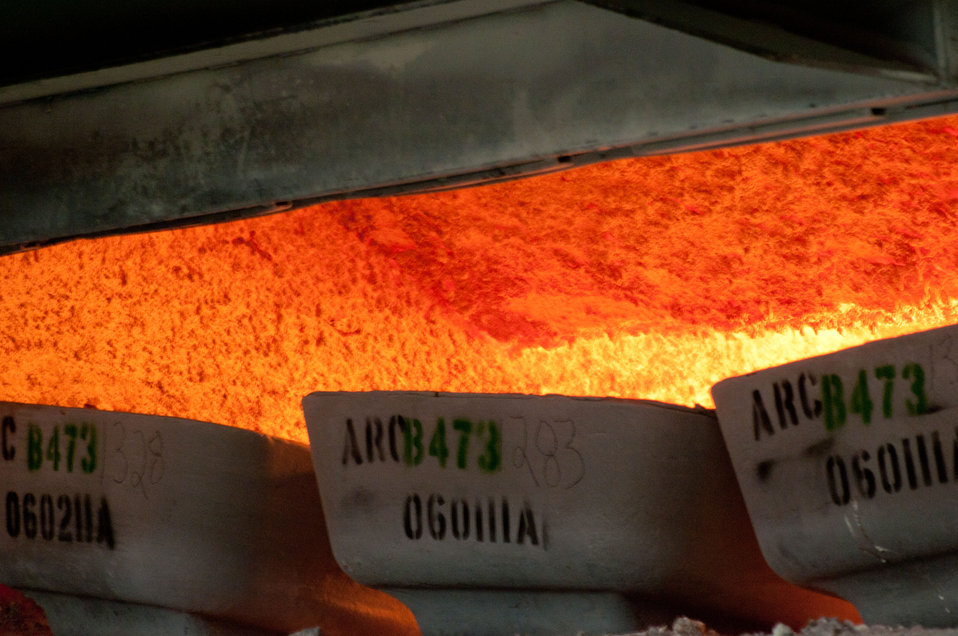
Melter begins to turn aluminum foundry ingots into molten metal at the Port City Group’s Port City Castings Corporation; a manufacturer of high-pressure aluminum die-castings, mostly for the automotive industry, in Muskegon, MI, facility on Wednesday July 20, 2011. Port City Group boosted its employment by 12 percent over last year thanks to two Rural Business Guaranteed Loans totaling $9.6 million. In its 80,000 sq. ft. facility, machines that range from 800 – 1,600 tons, and cast A380 aluminum alloy products from melted ingots of aluminum, into automotive components of U.S.A. made vehicles. The process features a variety of robotic presses; computer controlled machining; quality control facility; and complete measurement and testing laboratory. In 2009 banks were backing out of loans for PCG equipment purchase agreements. The U.S. Department of Agriculture (USDA) loan guarantee helped make the loan possible with its guarantee. PCG obtained the needed robotic and other equipment. This resulted in a stable workforce that has since grown. When asked about their USDA experience, Port City Group Sales Manager Laura LaGuire said, “It was great! They were very helpful. Everything that came up was handled smoothly, the money came in place when it was needed, and it was a very smooth transition.”